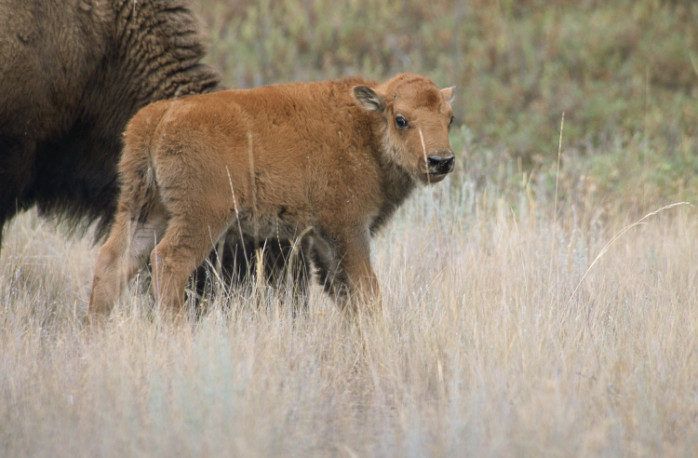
bison calf

National Bison Range